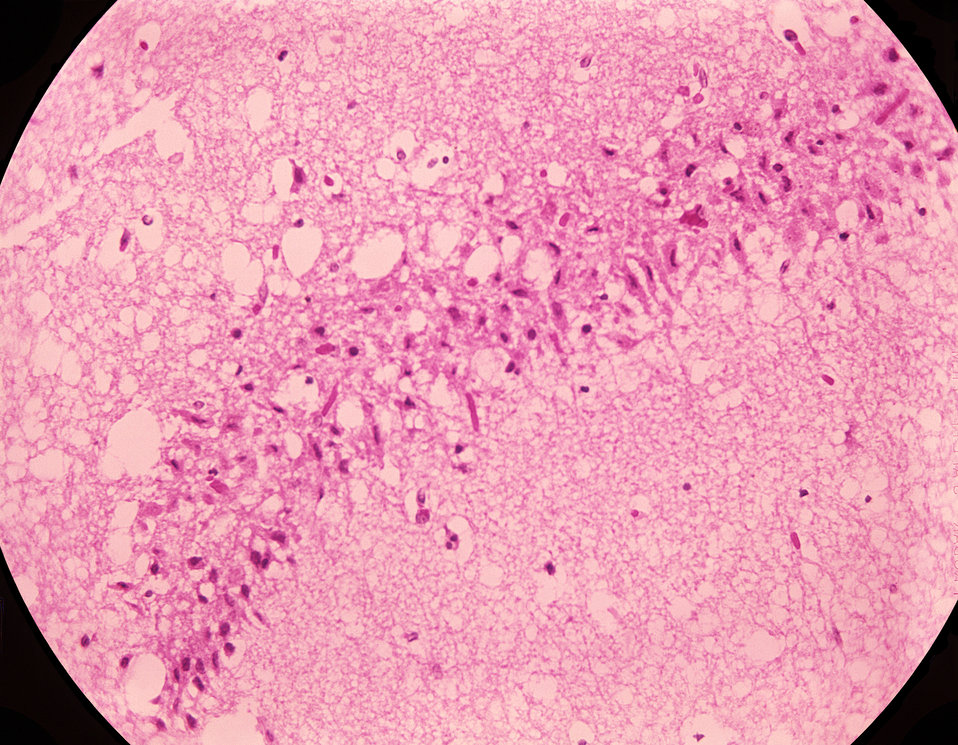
This photomicrograph of mouse brain tissue after dying of Venezuelan Encephalitis reveals neural necrosis and edema.